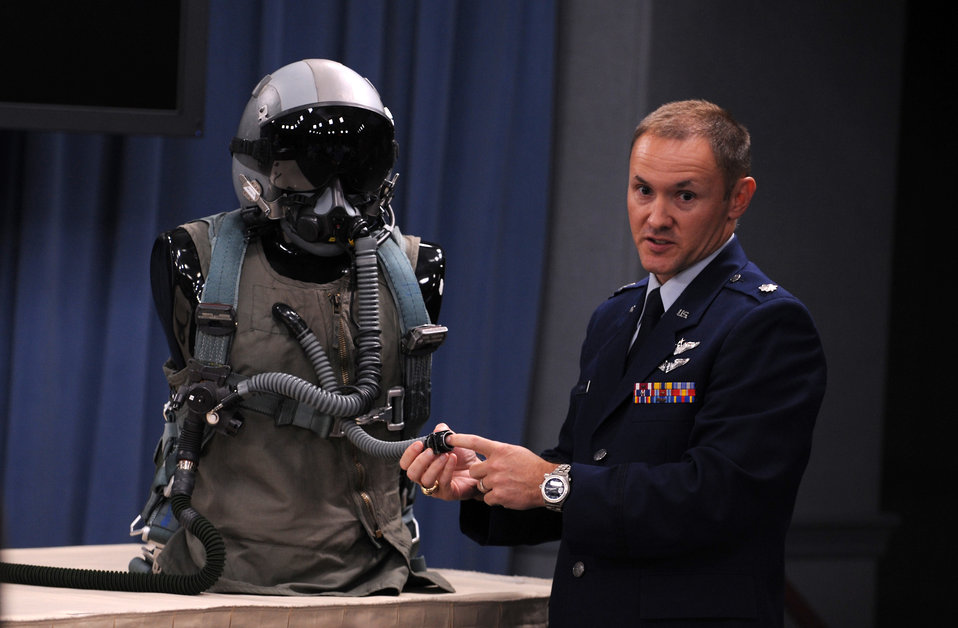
Air Force assures F-22 readiness following extensive testing

Lt. Col. Jay Flottmann explains how a valve in the upper pressure garment and the shape and size of oxygen-delivery hoses and connection points contributed to previously unexplained physiological issues during F-22 Raptor flights. He spoke during a press conference in Washington, D.C., July 31, 2012. Flottmann is a flight surgeon and 325th Fighter Wing chief of flight safety.